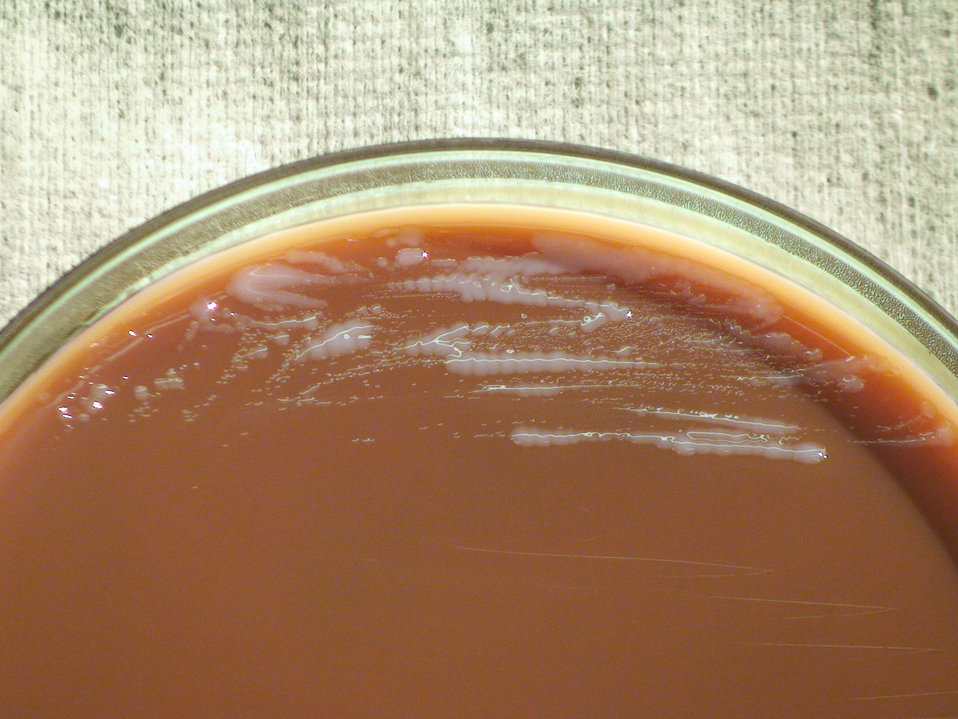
This photograph depicts the colonial morphology displayed by Gram-negative Francisella tularensis bacteria, which was grown on a medium of chocolate agar, for a 48 hour time period, at a temperature of 37�C. Take a look at PHIL 12437 and 12438 depicting the appearance of F. tularensis colonies grown on the same medium, and at the same temperature, but for half the time (24hr). Also see both PHIL 12440 and 12441, for the appearance of bacterial colonies, again, grown on the same medium, and at the same temperature, but for a greater time period of 72hrs.